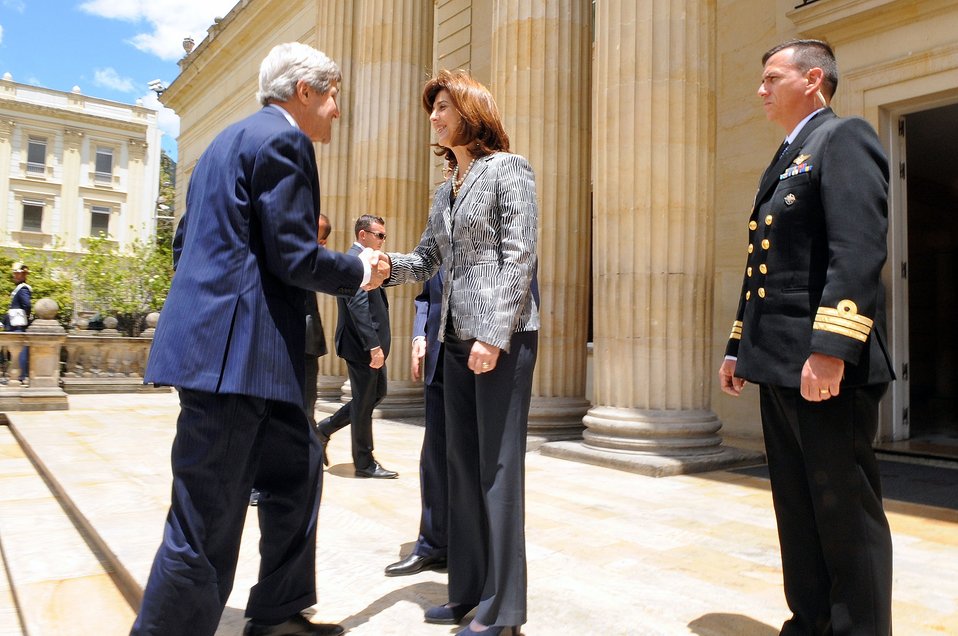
Secretary Kerry Is Greeted By Colombian Foreign Minister Holguin

U.S. Secretary of State John Kerry is greeted by Colombian Foreign Minister Maria Angela Holguin as he arrives for a meeting with Colombian President Juan Manuel Santos at Casa de Narino in Bogota, Colombia, on August 12, 2013.